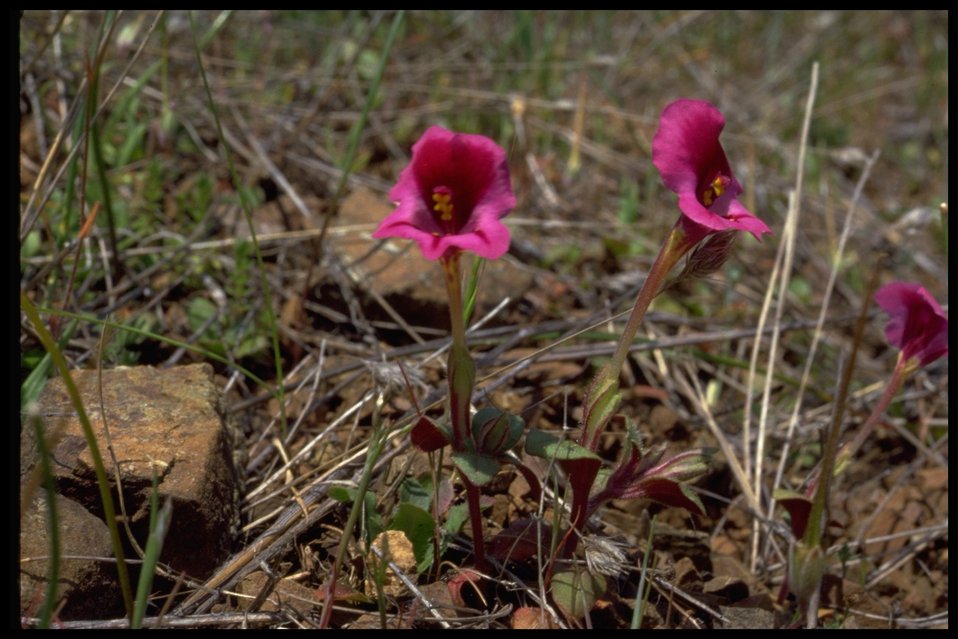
Medium shot of Kellogg's monkey flower (Mimulus kelloggii).